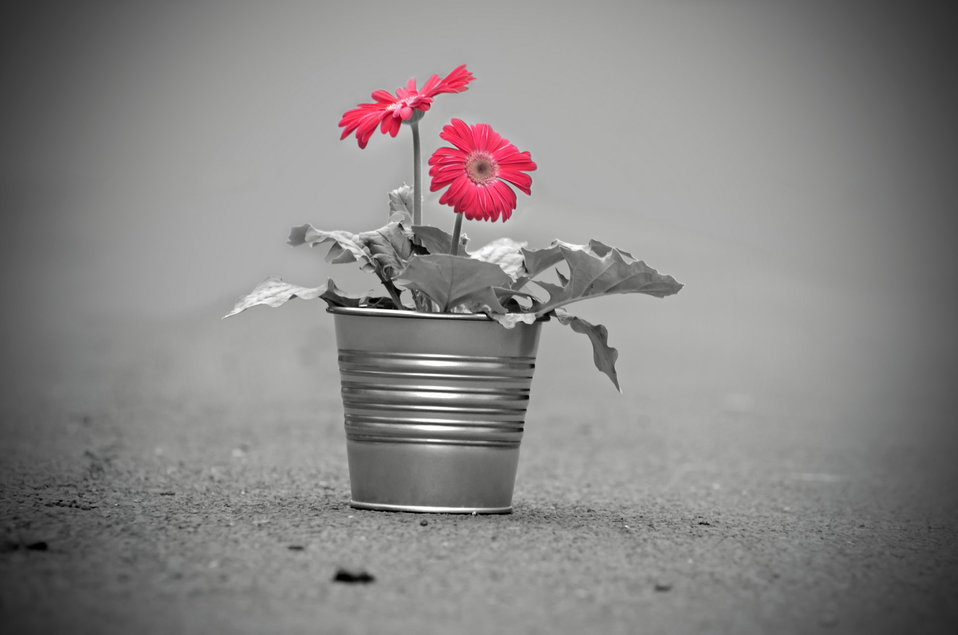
Red flower - light effect.